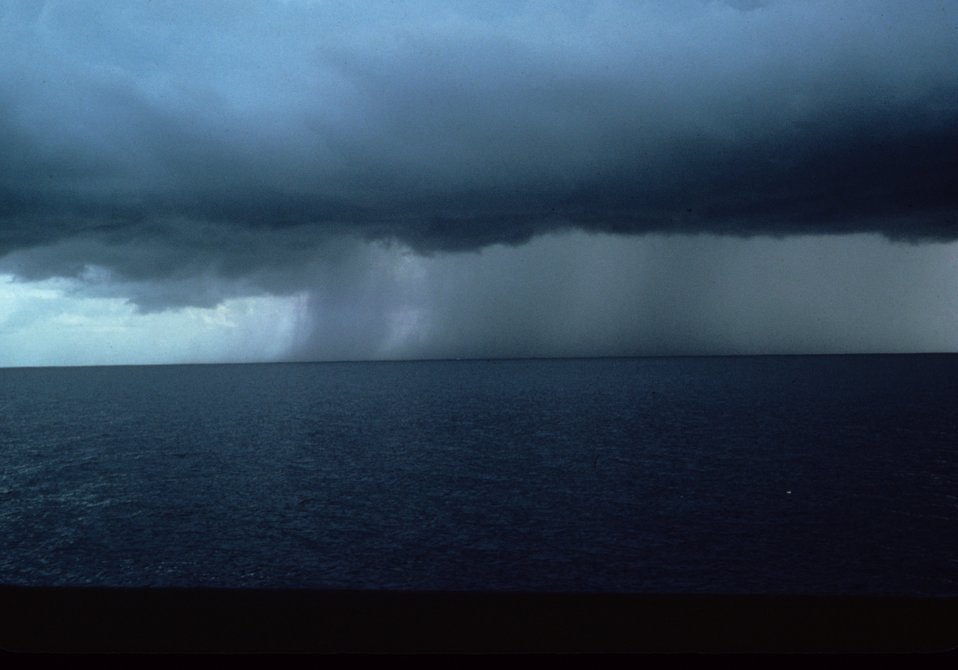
A downburst observed at sea.